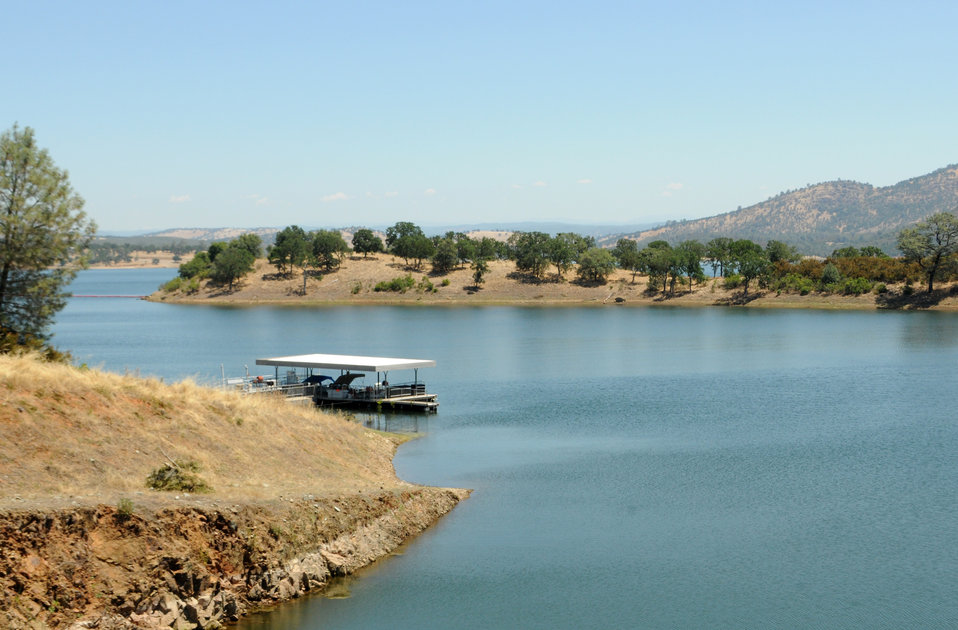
New Hogan Lake and Dam, Calaveras County, Calif.

A view of New Hogan Lake near Valley Springs, Calif., July 8. The 4,400 surface acre lake is located in the oak and brush-covered foothills of the Sierra Nevada Mountains and was created in 1964 with the completion of New Hogan Dam.

When full, the lake has 50 miles of shoreline and extends nearly eight miles upstream to the confluence of the north and south forks of the Calaveras River. The lake includes several campsites, boat ramps and other recreational activities open to the public.